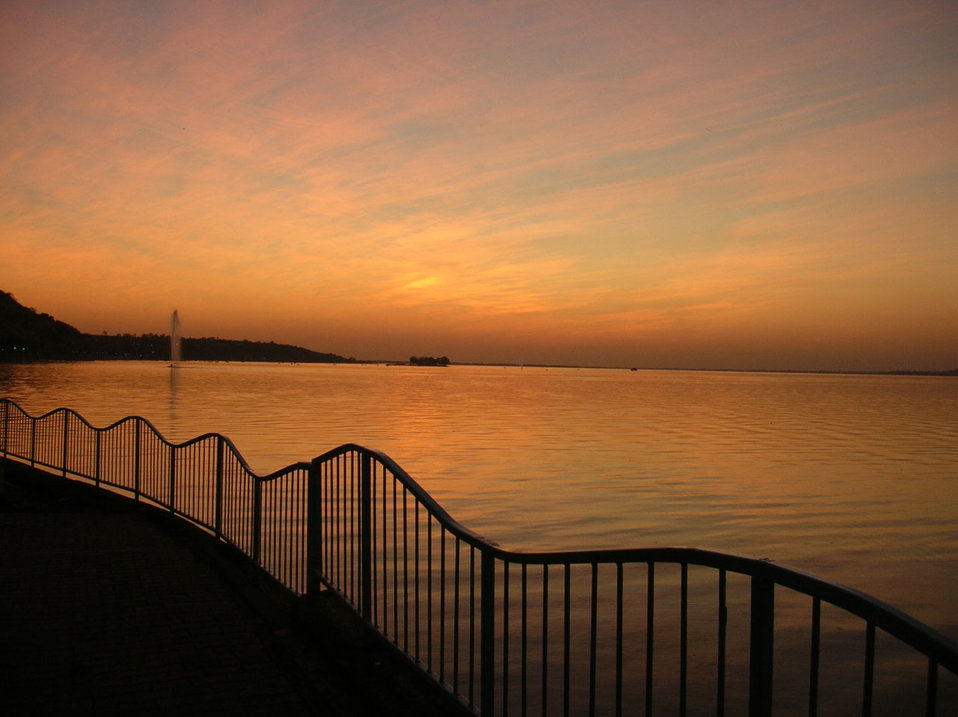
Sundown over lake

Sunset over the lake.